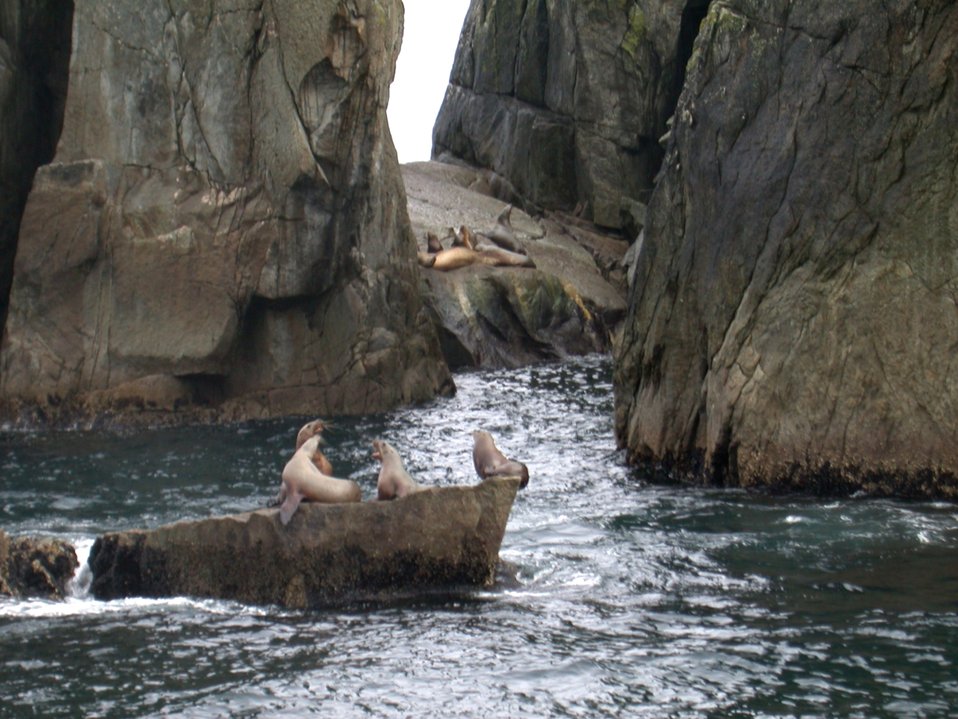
Sea Lions at the Chiswell Islands National Wildlife Refuge